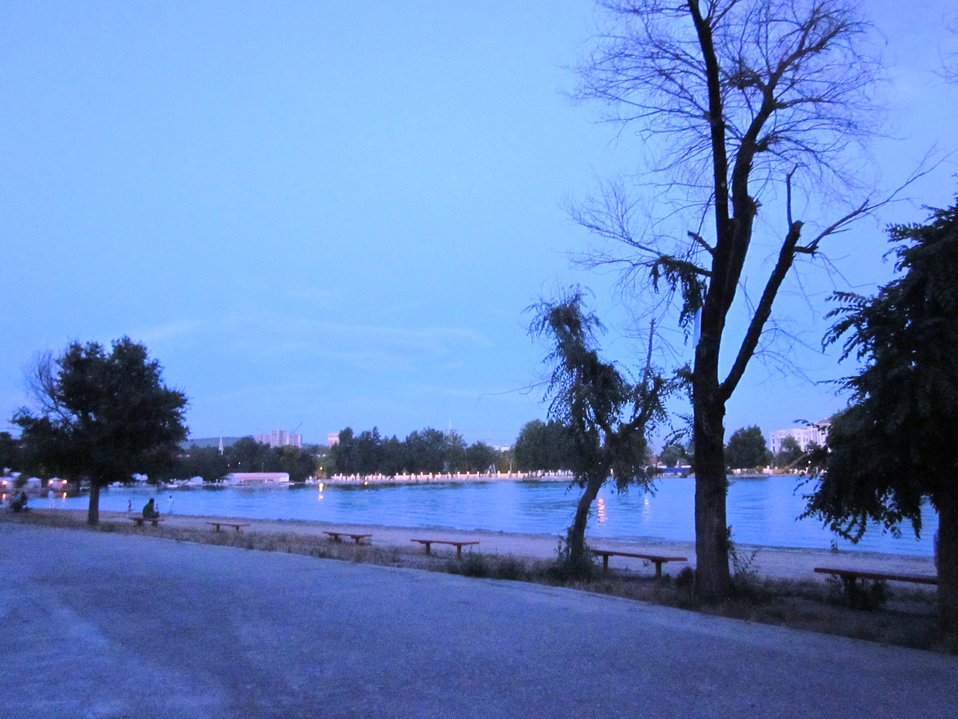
Dushanbe Glows at Dusk

A photo is taken of the scenery in Dushanbe, Tajikistan, on June 6, 2010.